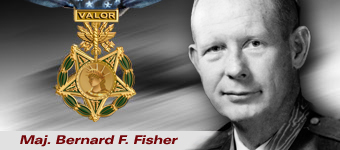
Maj. Bernard Fisher

Maj. Bernard F. Fisher, Medal of Honor recipient.